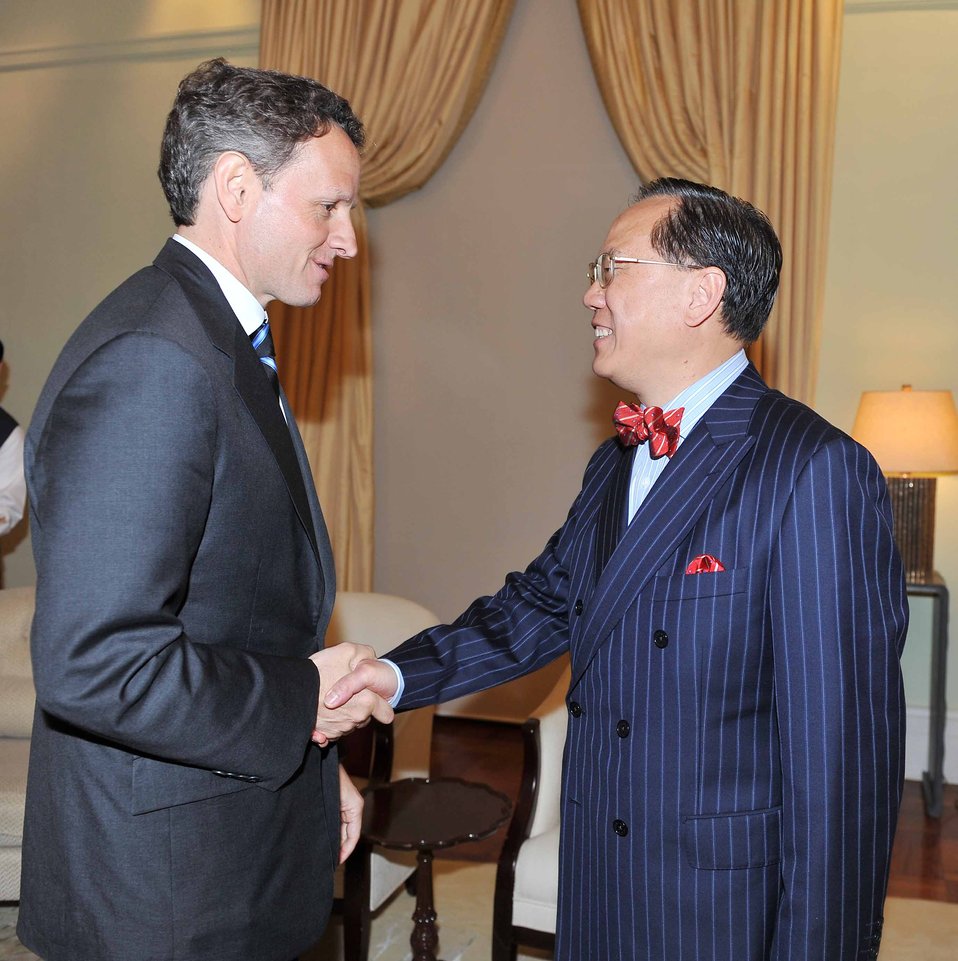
Hong Kong SAR Chief Executive Donald Tsang

Secretary Geithner and Hong Kong SAR Chief Executive Donald Tsang in Hong Kong on April 8, 2010.